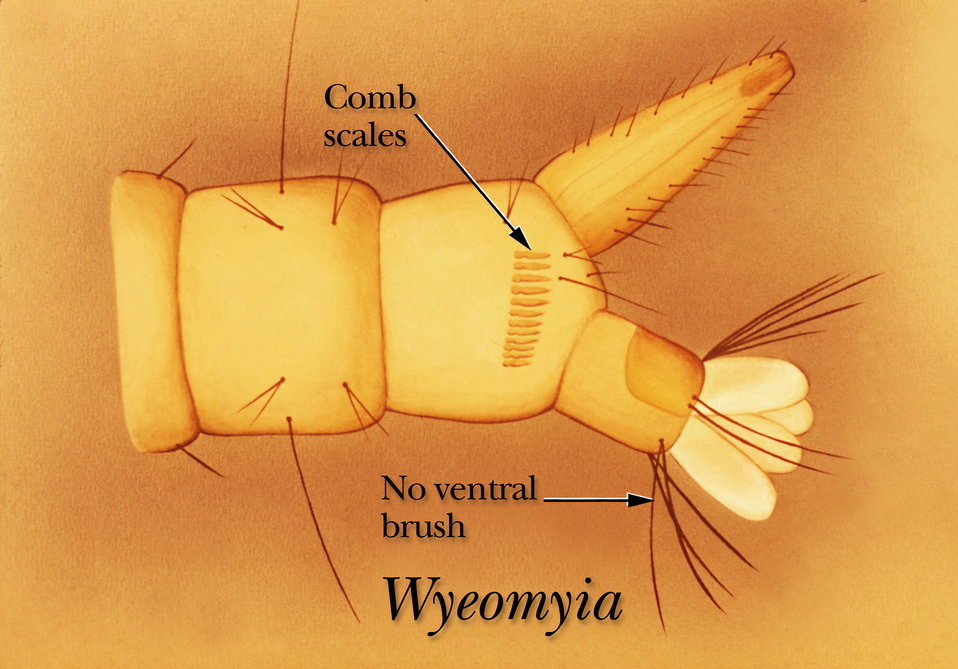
An illustration of the ventral surface of the terminal segment of a Wyeomyia mosquito larva.